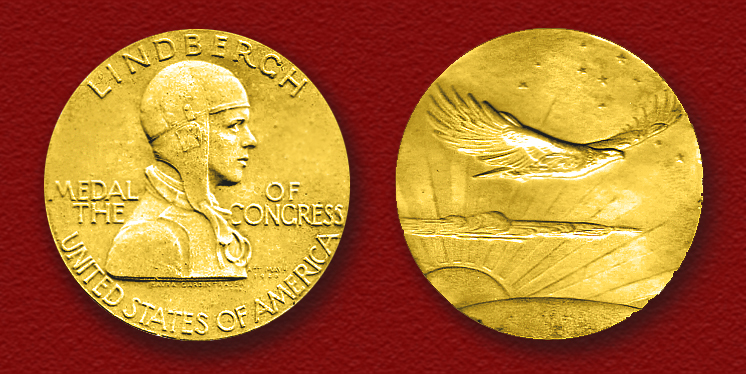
The Congressional Gold Medal, authorized by the Congress on 4 May 1928, and presented to Col. Charles A. Lindbergh by President Calvin Coolidge at The White House, Washington, DC, 15 August 1930